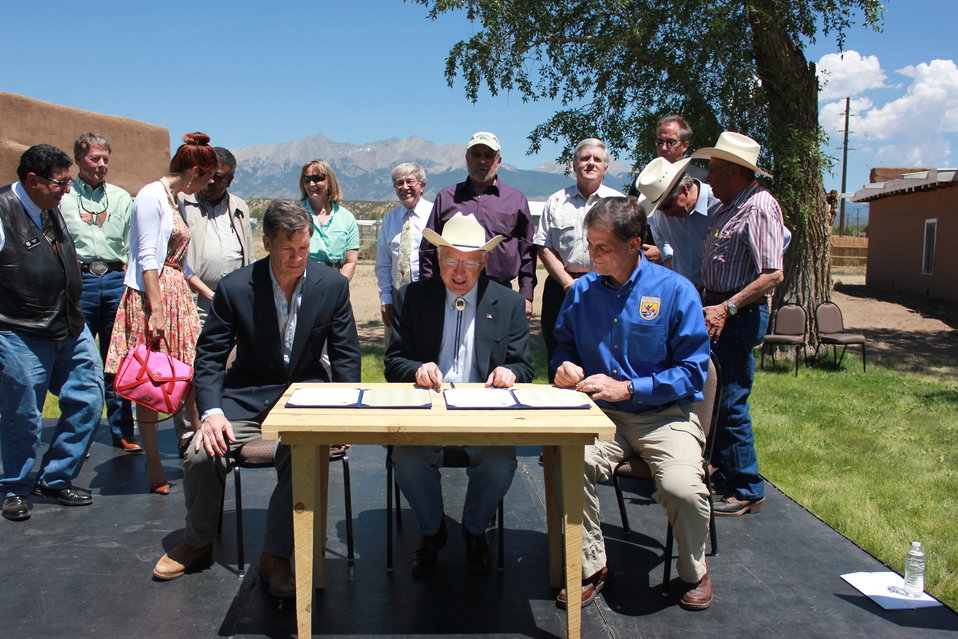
Historic Conservation Easement in Sangre de Cristo Mountains